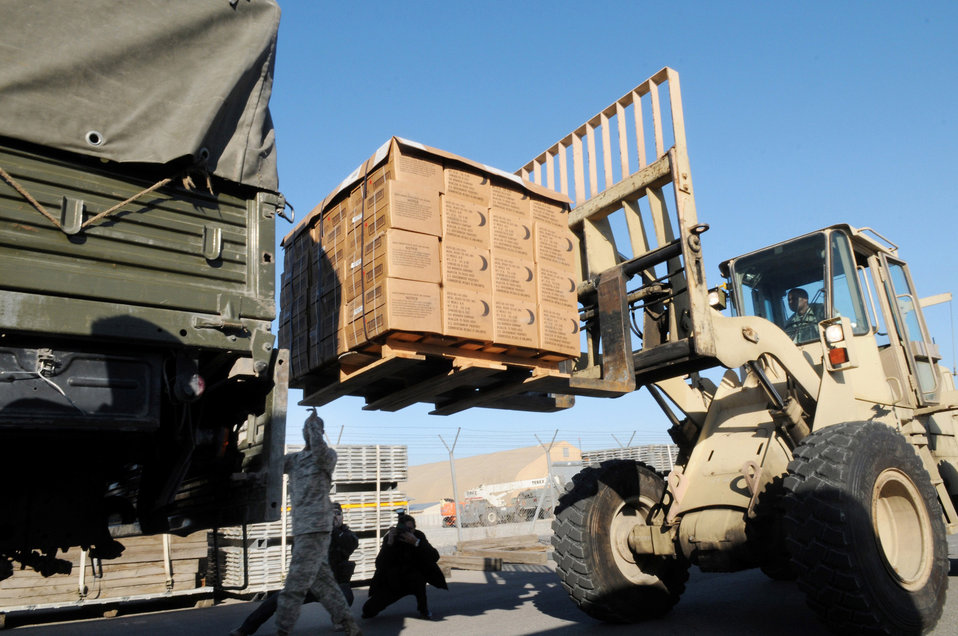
Manas Airmen help provide aid to Kyrgyz in need

Airmen at Manas Air Base, Kyrgyzstan, work with Kyrgyz military representatives from the Ministry of Emergency Situations to load donated meals-ready-to-eat following a humanitarian assistance ceremony at the base Nov. 25. Department of Defense officials donated MREs and cold weather sleeping bags to help local Kyrgyz who may need assistance during the coming winter.